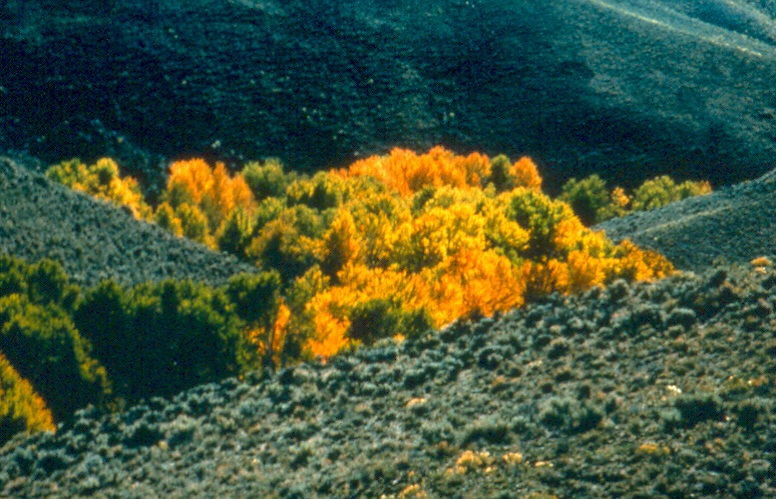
Salmon FIeld Office UCSC Upper Columbia Salmon Clearwater District